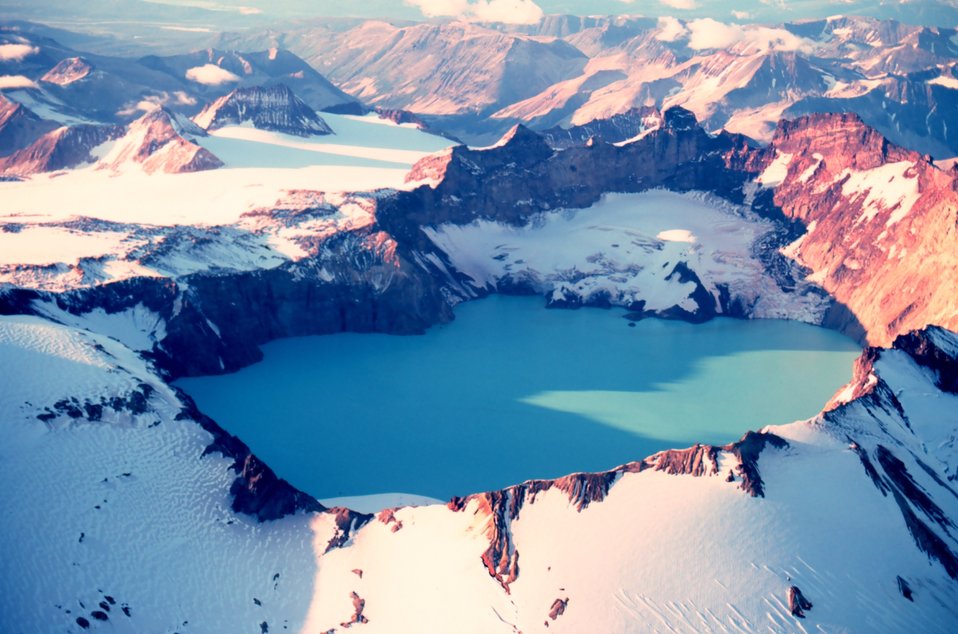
Katmai Crater